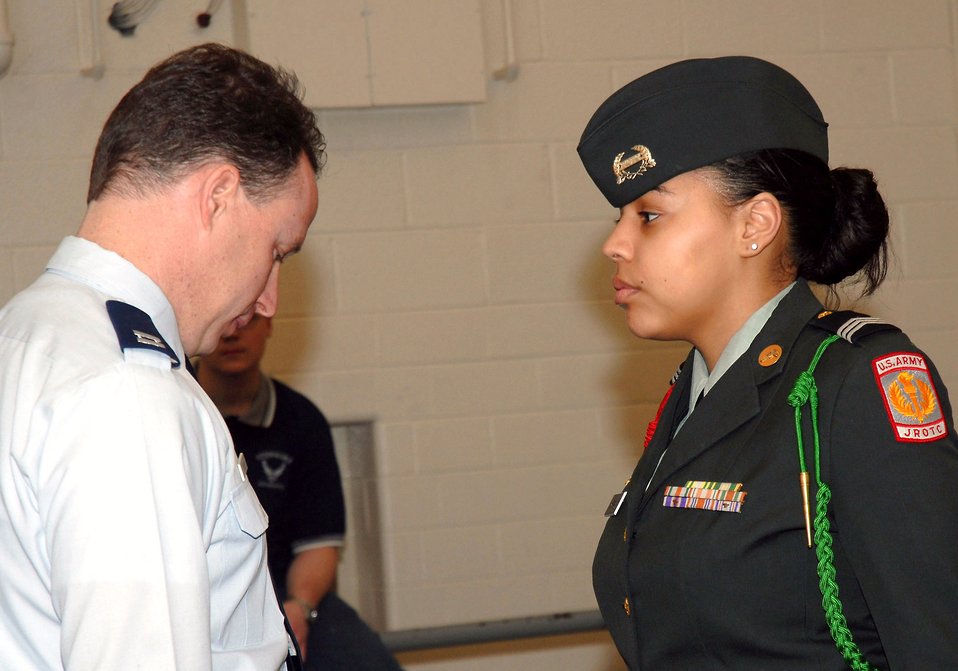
Airmen judge junior ROTC drill competition

Capt. Rick Ernest inspects an Army junior ROTC cadet's uniform during an open ranks inspection at a junior ROTC drill team championships March 29 at Walter E. Stebbins High School in Riverside, Ohio. Captain Ernest is a meterologists at the National Air and Space Intelligence Center from Wright-Patterson Air Force Base, Ohio.